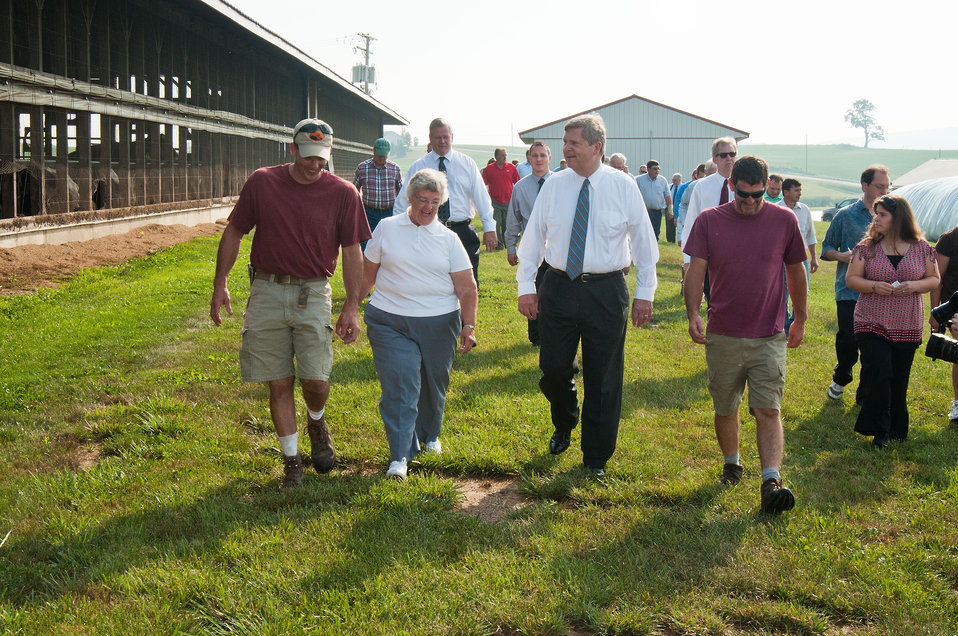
From left: Duane Stoltzfus, Mary Jane Stoltzfus, Agriculture Secretary Tom Vilsack and Glenn Stoltzfus tour Pennwood Dairy Farms in Berlin, PA on Tuesday, July 17, 2012. During Secretary Vilsack’s visit he highlighted the U.S. Department of Agriculture’s’s (USDA) energy efficiency programs and announced a new effort to help rural consumers make affordable, energy-efficient improvements to their homes and businesses. The Pennwood Dairy Farms uses an anaerobic digester to produce energy to operate the farm. The digester captures biogas for energy production, manages odors and reduces the net effect of greenhouse gas emissions. The anaerobic digester practice is part of a planned conservation management system that manages manure and/or comprehensive nutrient management system.